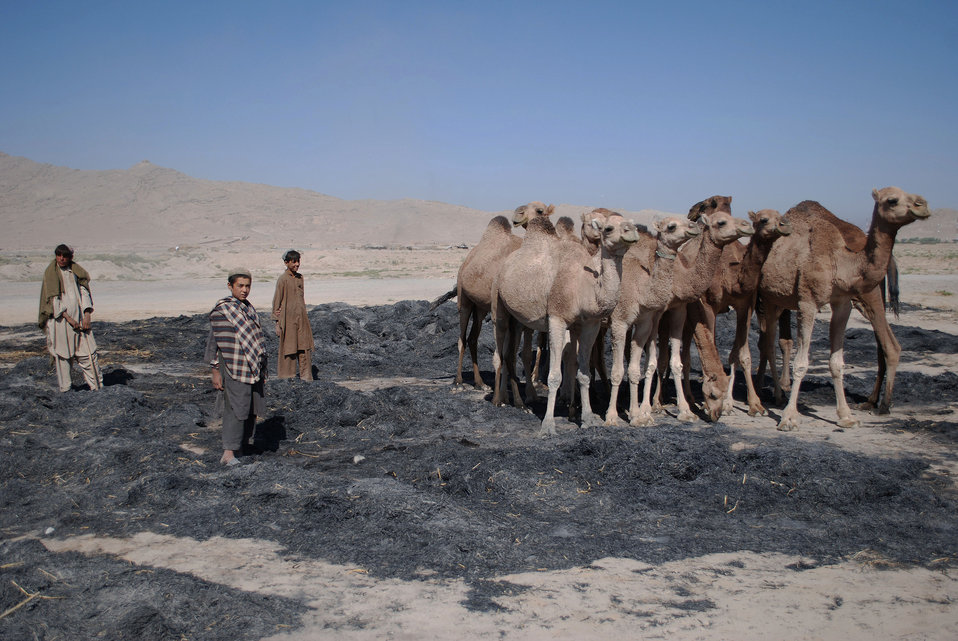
'On the Road' in Kandahar